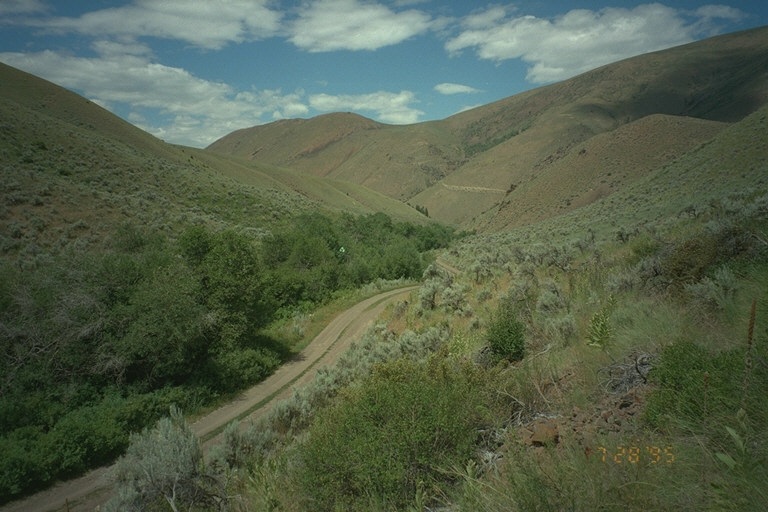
Riparian area Public Lands Salmon Field Office UCSC Upper Columbia Salmon Clearwater District